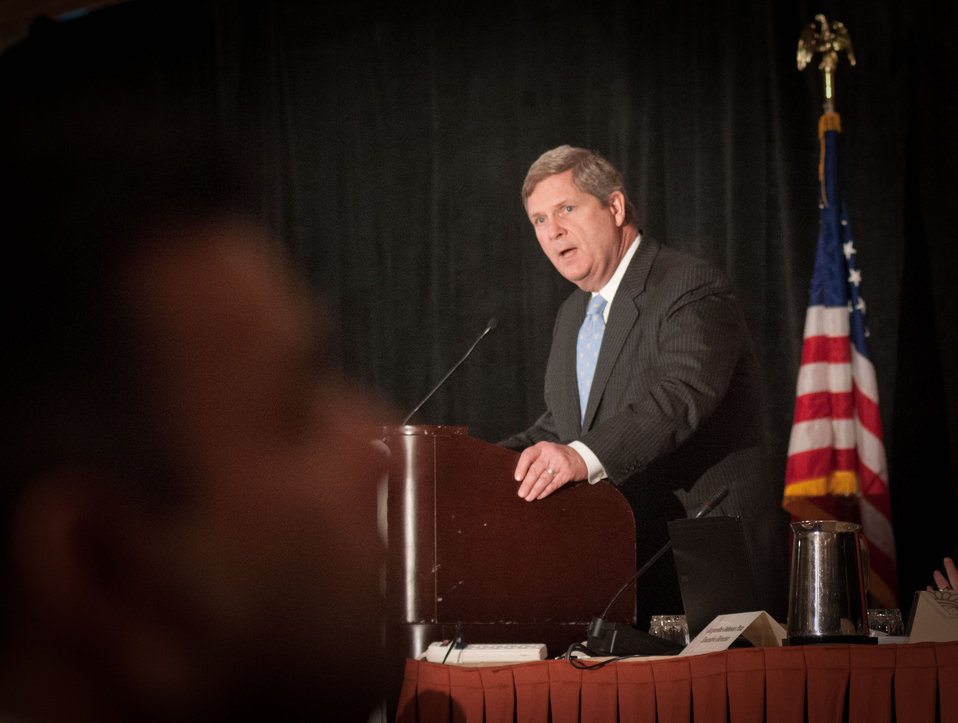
Agriculture Secretary Tom Vilsack today joined tribal leaders from across the nation at the National Congress of American Indians Tribal Nations Legislative Summit in Washington, D. C. on Wednesday March 7, 2012, where he announced investments of $900,000 for positive nutrition education and physical activity habits that can lead to healthier lifestyles. The grants are funded through U.S. Department of Agriculture’s (USDA) Food Distribution Program on Indian Reservations (FDPIR) and will provide nutrition education materials and resources for children and parents in tribal communities in 9 states. USDA chose 17 applicants, located in California, Minnesota, Montana, Oklahoma, South Dakota, Washington, Wisconsin, New Mexico and Alaska to receive FY 2012 funding to develop nutrition education projects that incorporate Dietary Guidelines recommendations within the Native American culture. Secretary Vilsack reiterated USDA’s support to native communities with financial support for electric, broadband and wastewater infrastructure, and provide native families and businesses with home loans and business grants. Secretary Vilsack emphasized USDA’s participation in the First Lady’s Lets Move in Indian Country initiative to combat childhood obesity in tribal communities.